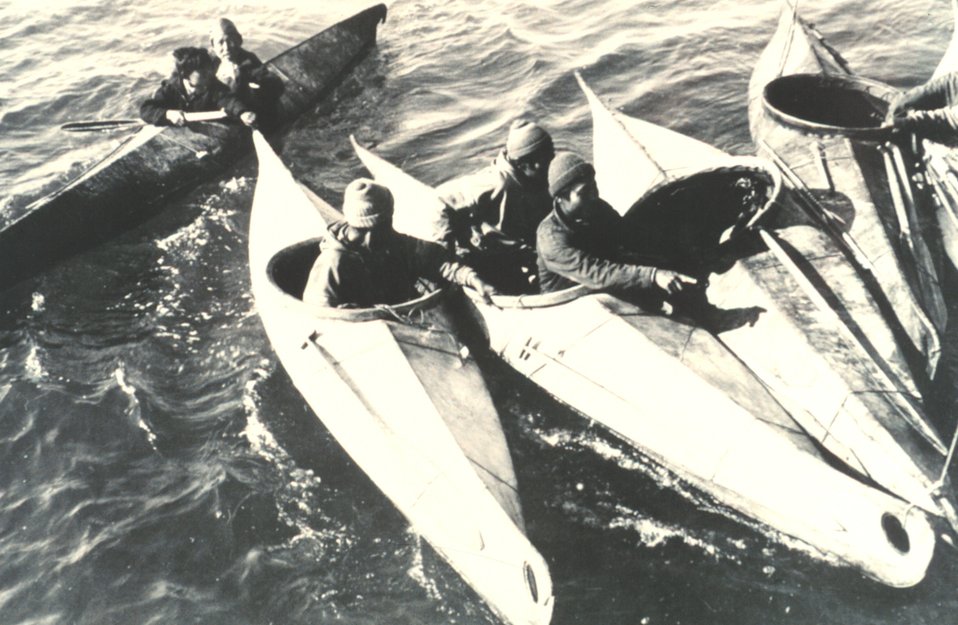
Eskimos congregating in their kayaks. The kayaks are used for hunting and transportation. F&WS B-51432.